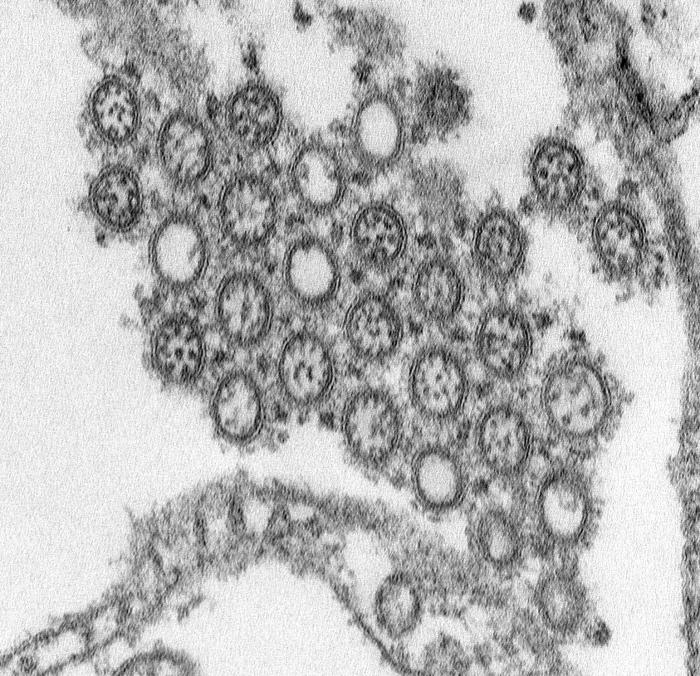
This highly-magnified transmission electron micrograph (TEM) depicted numbers of virions from a Novel Flu H1N1 isolate. See PHIL 11745 for a colorized version of this image.What is 2009 H1N1 (swine flu)?